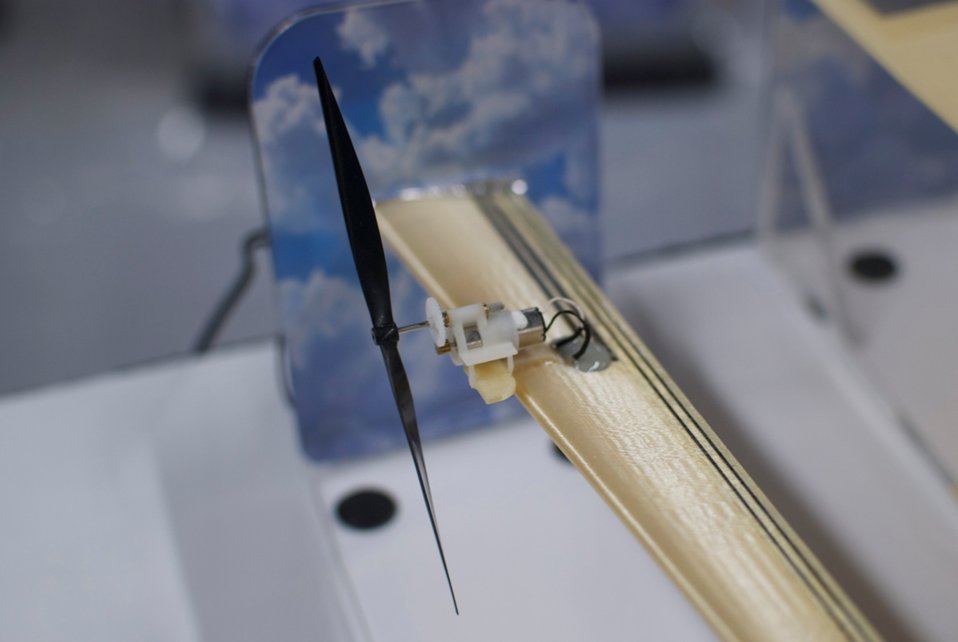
An Additive Manufacturing First

With research help from the Energy Department's National Laboratories, Stratasys and Optomec Inc. developed a manufacturing first when they merged 3D printing and printed electronics. The companies created the 'smart wing' -- an unmanned aerial vehicle (UAV) model -- using additive manufacturing technologies and printing fully functional electronics on the wing structure.